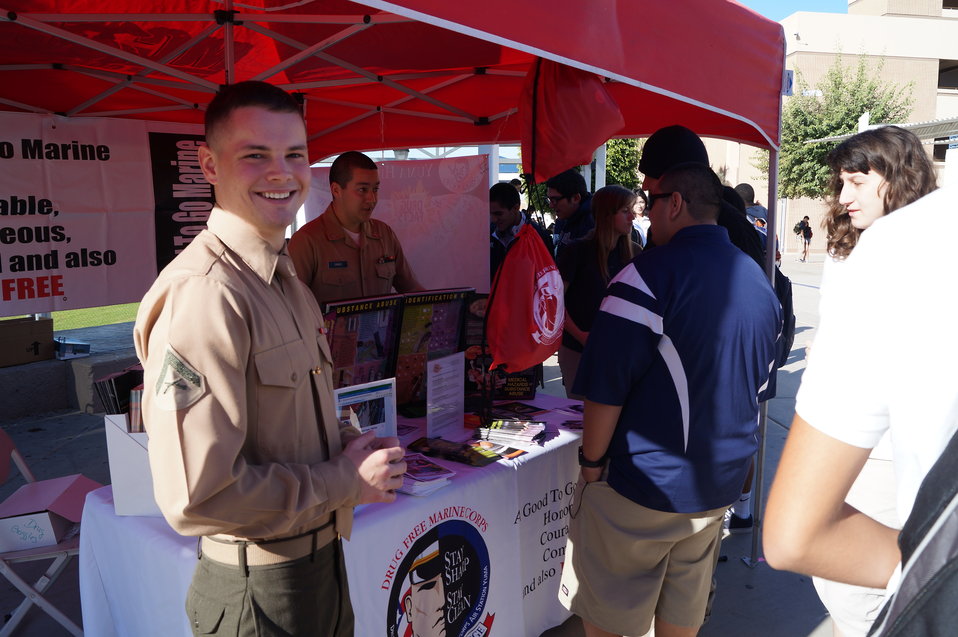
National Drug Facts Week - YUMA HIGH

The Drug Demand Reduction Program out of Yuma Arizona held numerous events at local schools to support NIDA's National Drug Facts Week, Jan. 27-Feb. 2 2014. Teens participated in drug awareness games, and helped to Shatter the Myths about teen substance abuse.